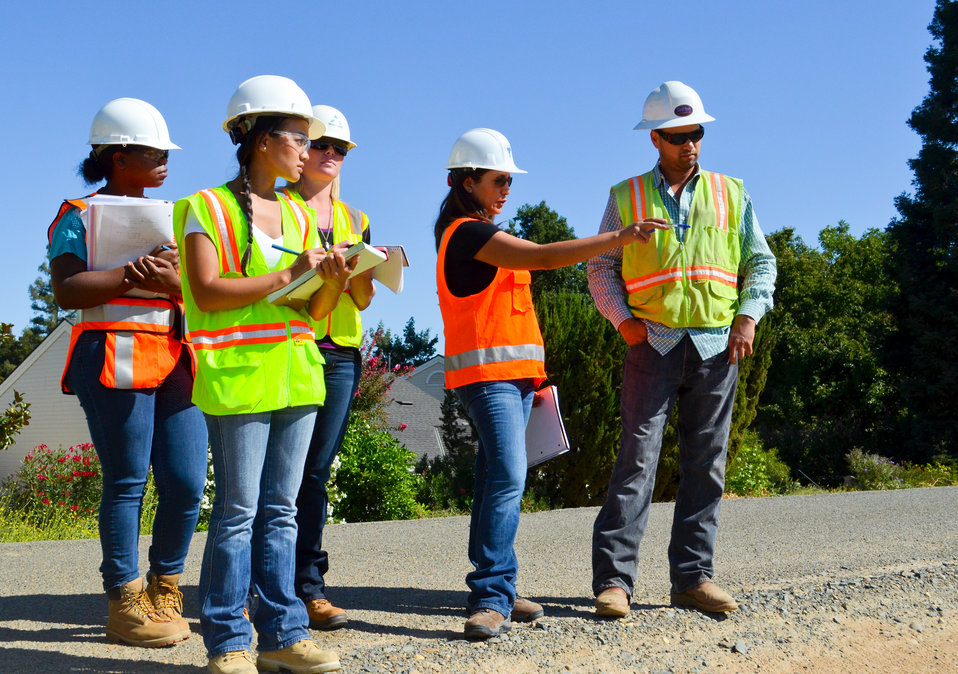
Danny Santillan talks operational efficiency with Maria Gutierrez

Maria Gutierrez (center) Sacramento State construction management senior discusses construction operations Sept. 7, 2012 with Danny Santillan contractor for the Howe Avenue levee raise project along the American River in Sacramento, Calif.
Santillan owns a U.S. Small Business Administration 8(a)-designated small business and was awarded the contract for the levee work here, Sept. 30, 2011. The Small Business Administration’s 8(a) Business Development Program is designed to help small, disadvantaged businesses compete for federal contracts.